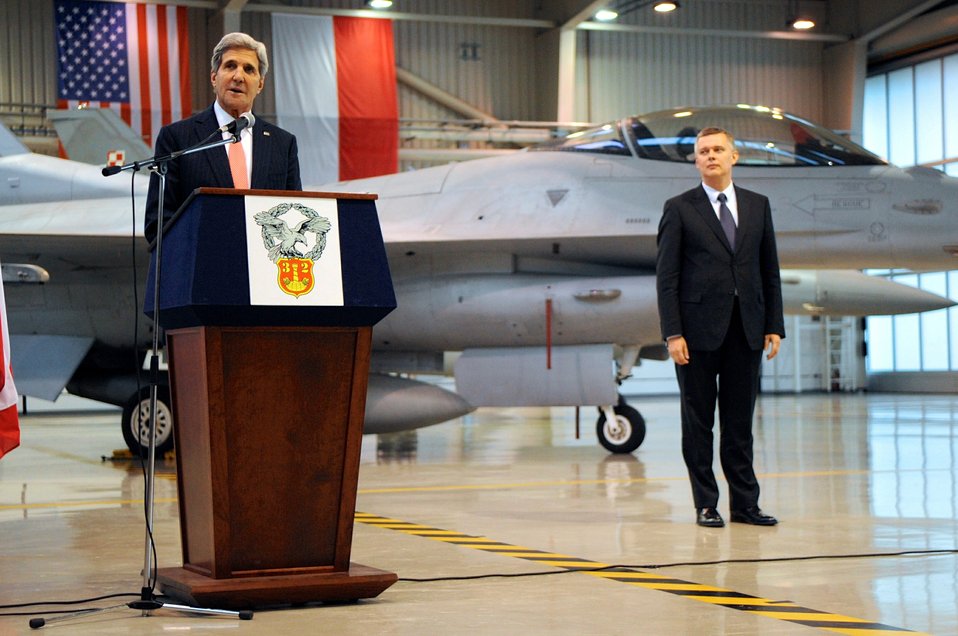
Secretary Kerry Salutes U.S.-Polish Military Cooperation

U.S. Secretary of State John Kerry, flanked by a American-made F-16 fighter jet and Polish Defense Minister Tomasz Siemoniak, salutes a U.S.-Polish military training partnership during a visit to the Lask Military Airbase in Poland on November 5, 2013.